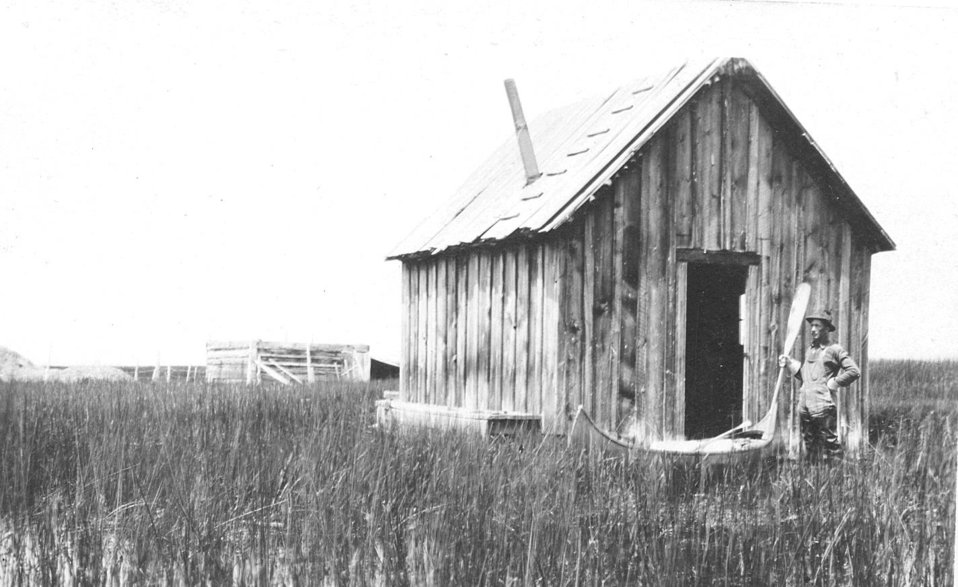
Homestead on Malheur Lake

A historic photo show a homestead on what is now Malheur National Wildlife Refuge. The homestead is no longer standing.